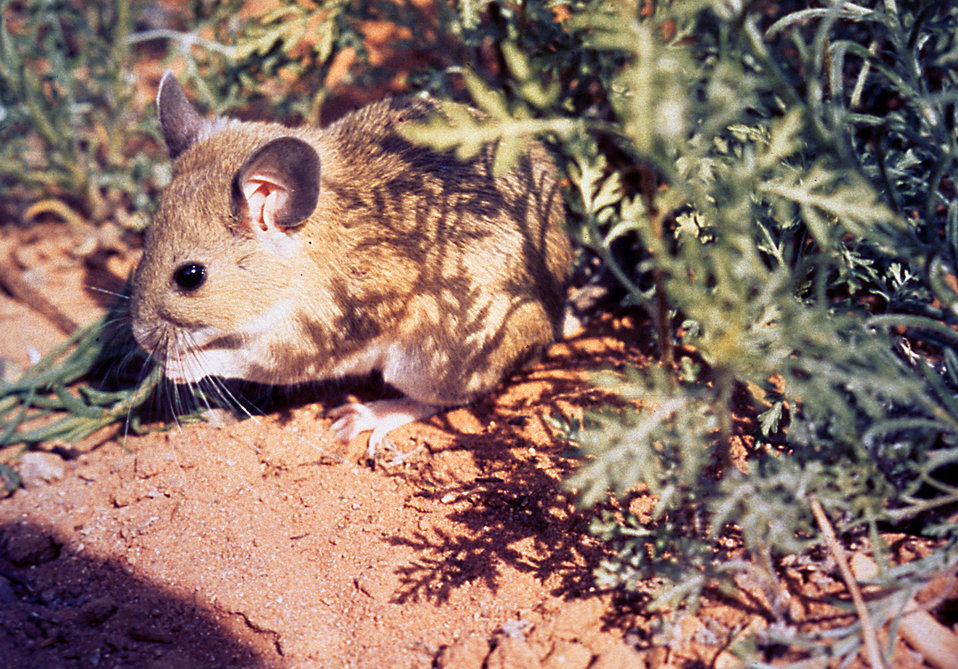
The White-throated Woodrat, Neotoma albigula, is a proven carrier of plague vector fleas.